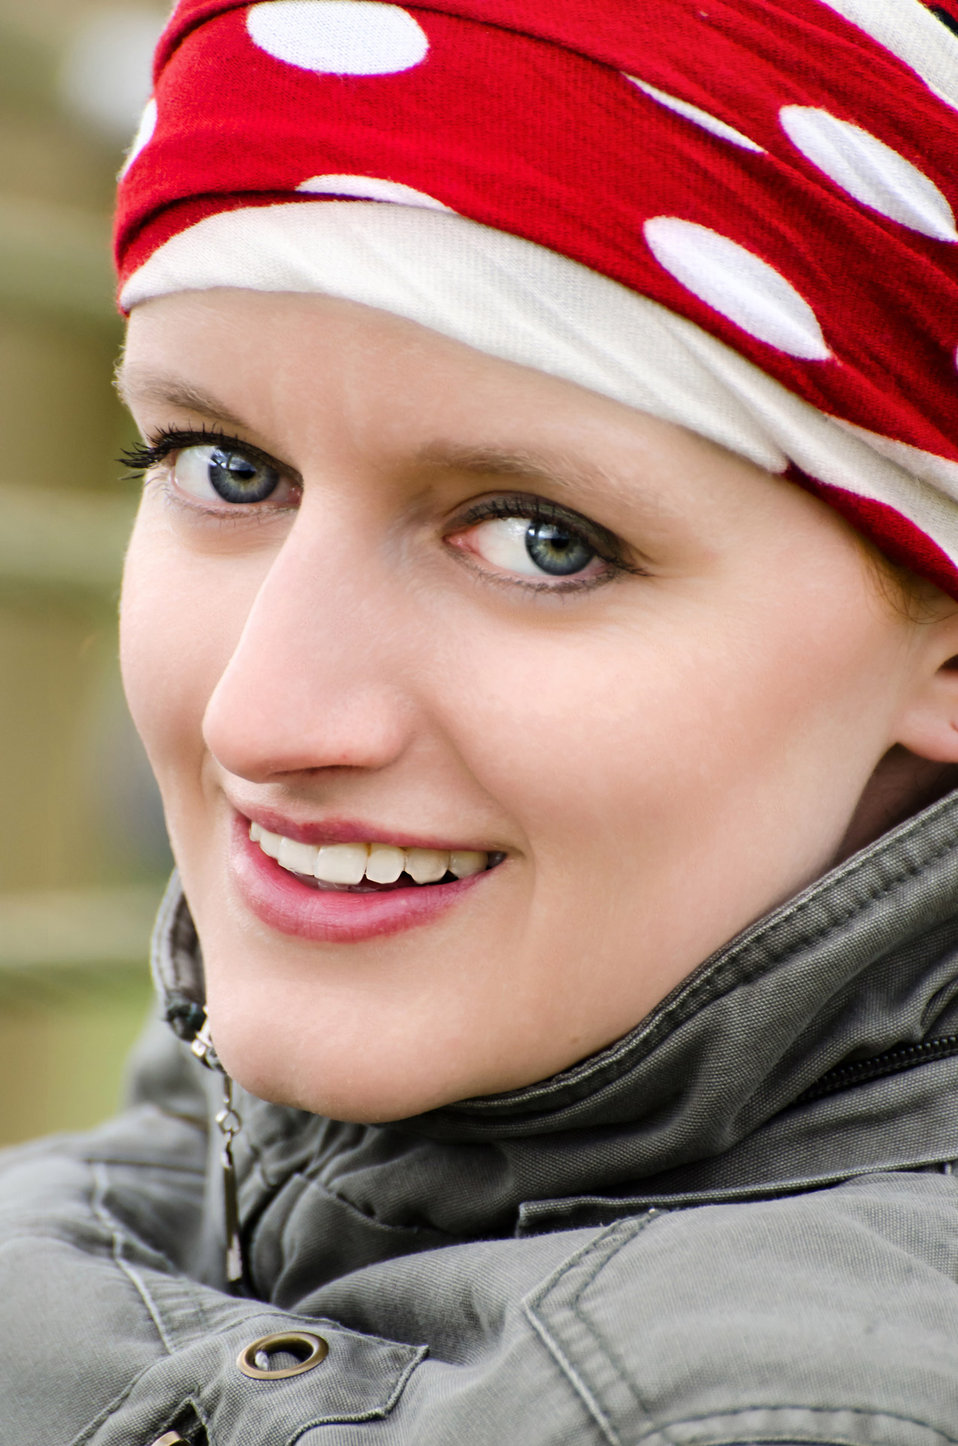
Woman and scarf.